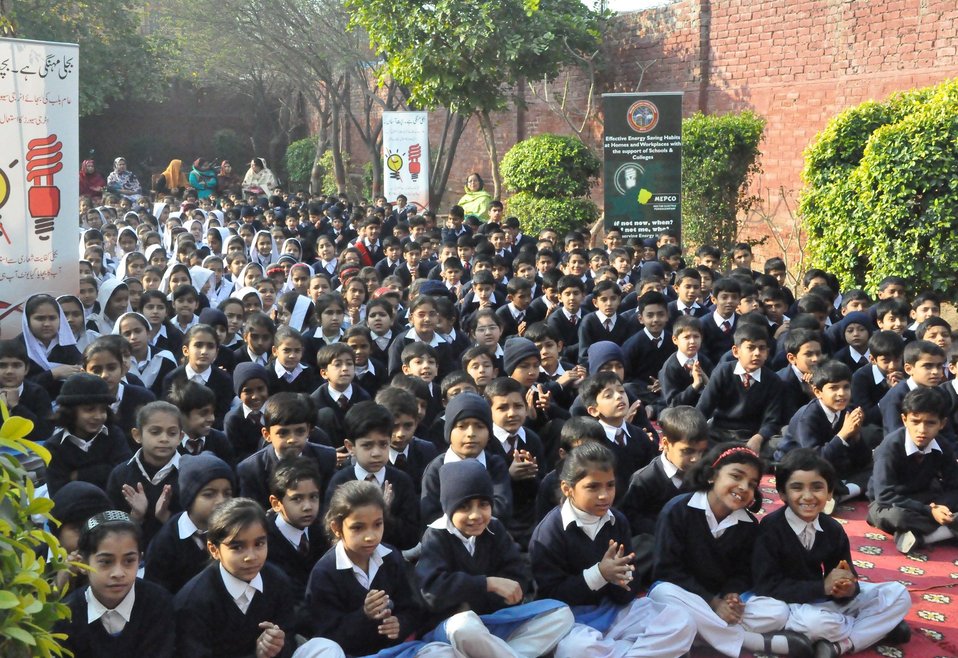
USAID enlightens Young Minds with Energy Conservation Tips

Multan Electric Power Company (MEPCO) with the assistance of the USAID Power Distribution Program has taken up the responsibility and is spreading the message to people in the southern belt of Punjab province. Thus far, an outreach campaign for school students has reached out to over 12,000 male and female students in Multan, where each of these students have pledged to share the energy saving tips with 5 of their friends and family members.

“I will tell my mother to change the yellow bulbs with energy savers which could reduce our electricity bill up to 80%.” Govt. Muslim Girls High School Anam Zahra